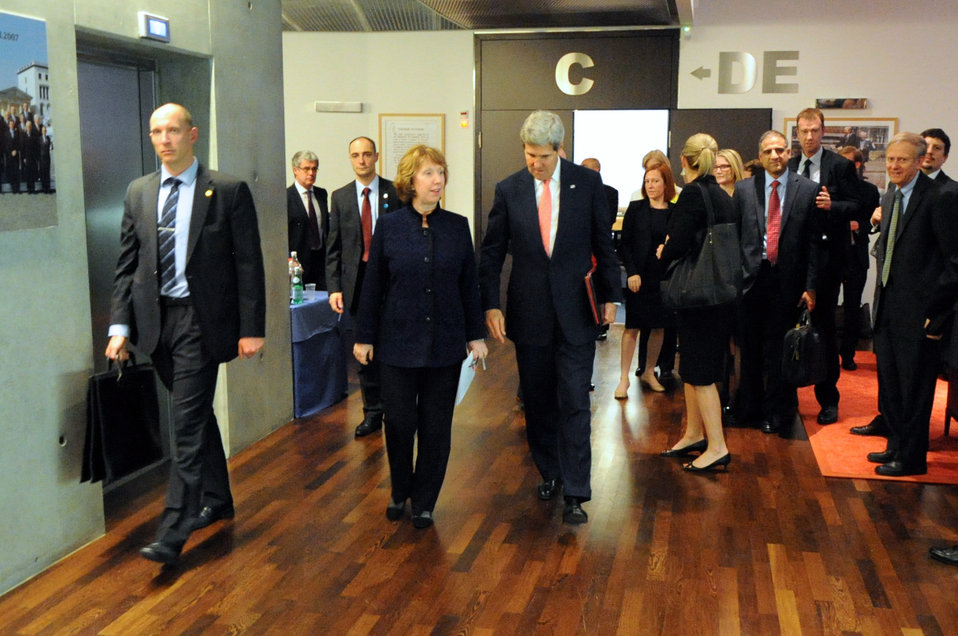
Secretary Kerry Meets With EU High Representative Ashton in Geneva

U.S. Secretary of State John Kerry walks with European Union High Representative Catherine Ashton after arriving at EU Headquarters in Geneva, Switzerland, on November 8, 2013, for meetings focused on Iran's nuclear capability.